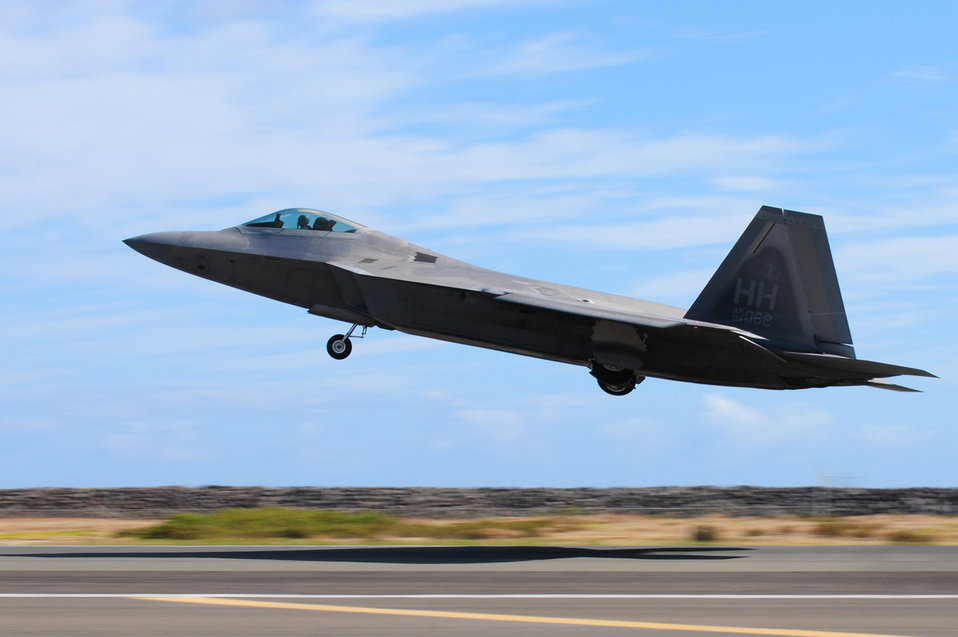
Back in business

An F-22 Raptor aircraft takes off from Joint Base Pearl Harbor-Hickam, Hawaii, Sept. 21, 2011, after a four-month Air Force-wide stand down. The commander of Air Combat Command directed a stand down of the fleet May 3, 2011, as a safety precaution, following 12 separate reported incidents of pilots experiencing hypoxia-like symptoms.